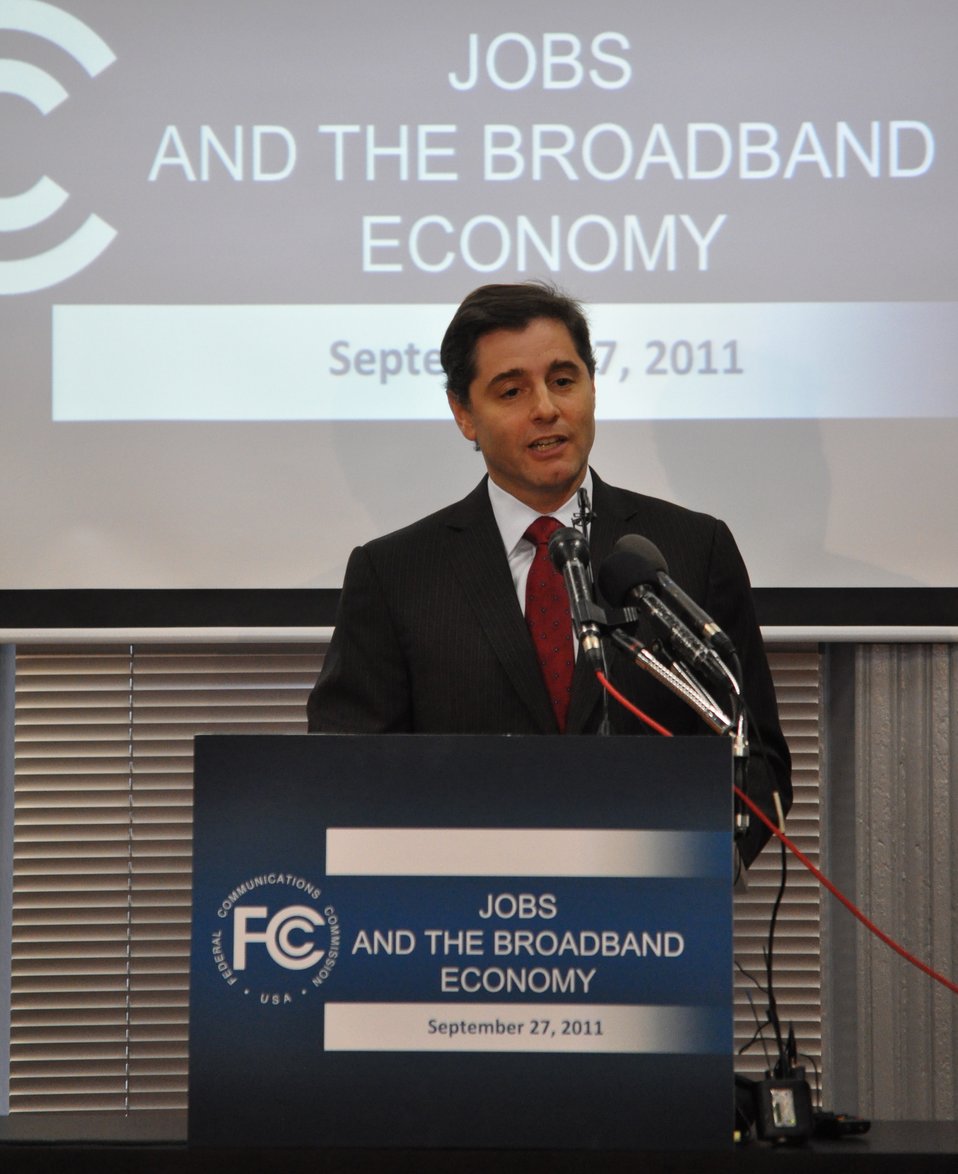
Jobs and the Broadband Economy

FCC Chairman Genachowski